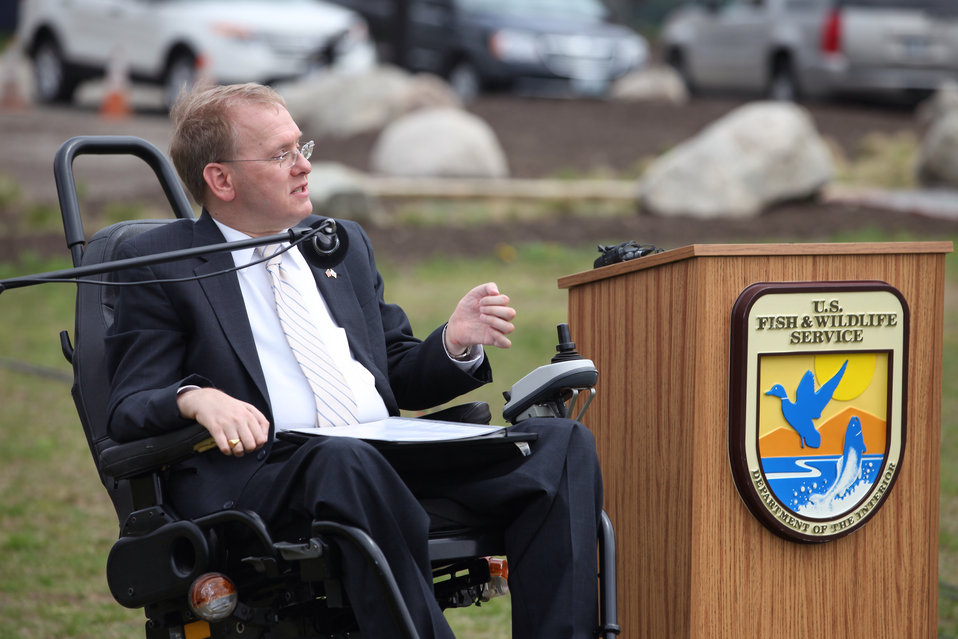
Congressman James Langevin

Rhode Island Congressman James Langevin speaking at the event.